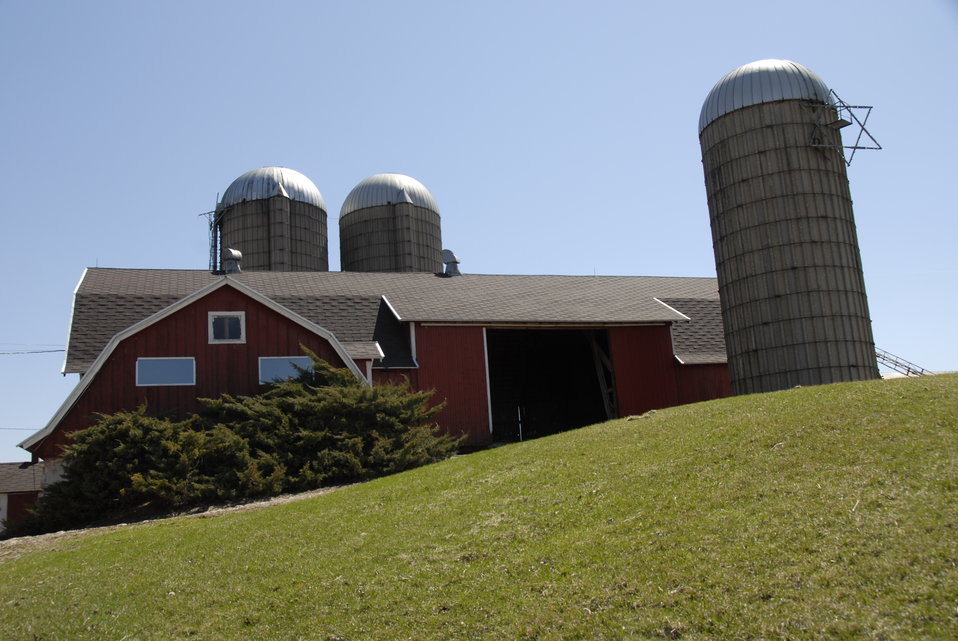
The sun shines down on the Gehrke farm in Elgin, Illinois on April 5, 2008.